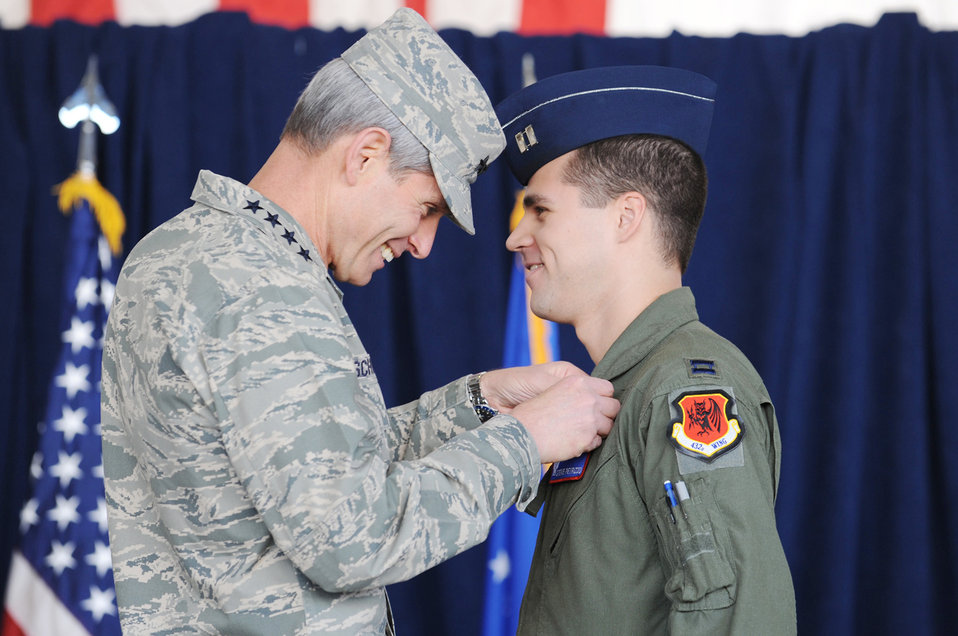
UAS mission enters new chapter with graduation

Air Force Chief of Staff Gen. Norton Schwartz presents Capt. Steve Petrizzo, 432nd Wing, his wings during the graduation from initial qualification training at Creech Air Force Base, Nev., Sept. 25, 2009. General Schwartz attended the ceremony as the presiding officer for the first UAS graduation.